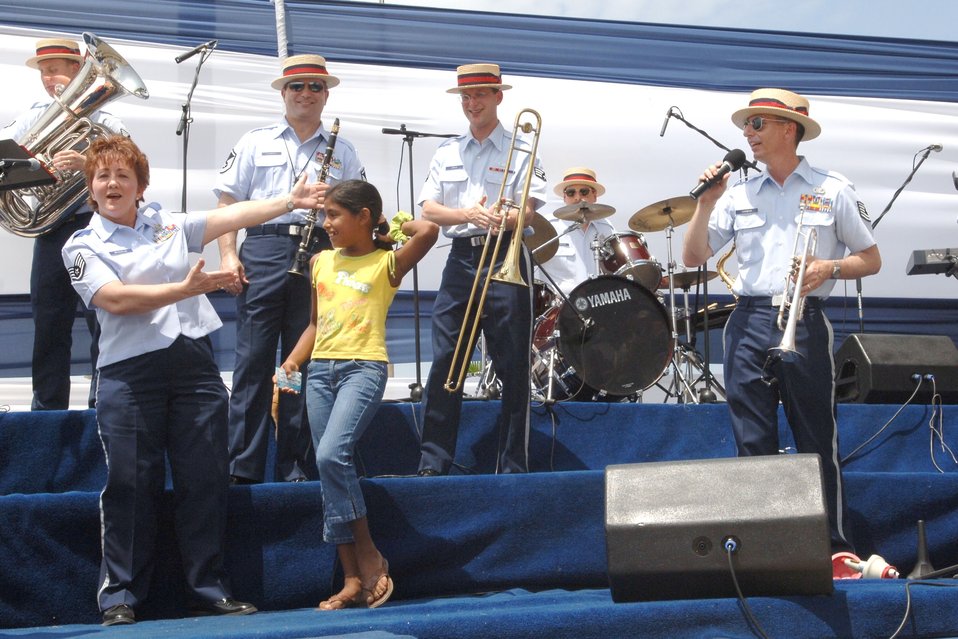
Airmen kick off part two of Falcon Condor 2007

The Air National Guard Band of the Southwest performs before a crowd of more than 15, 000 Peruvians during Falcon Condor 2007, a joint air show at Las Palmas Air Force Base, Peru. The air show directly supports the U.S. Southern Command's engagement goals and furthers relations between allied nations.